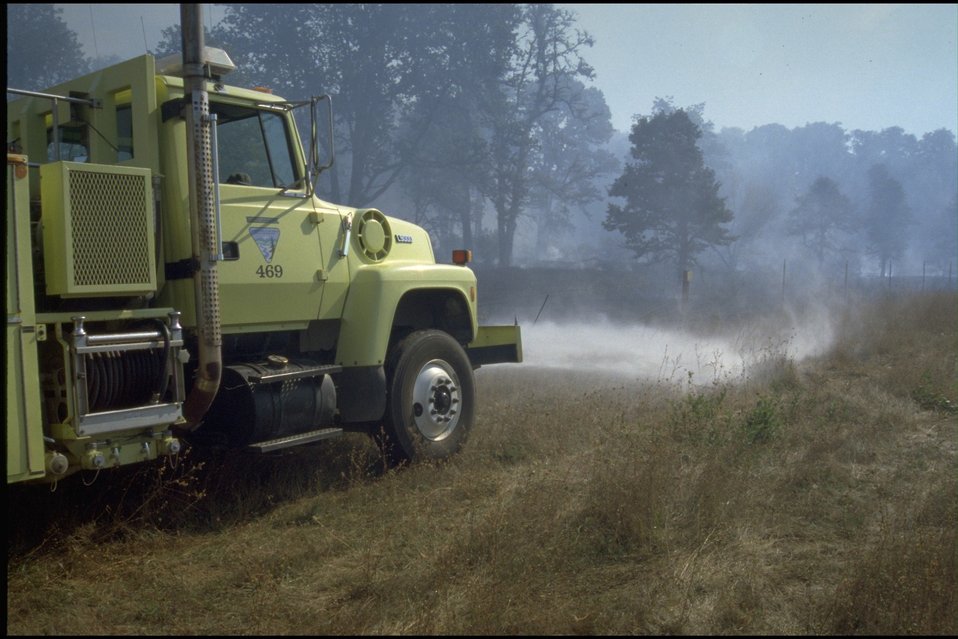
Long Tom ACEC Burn.